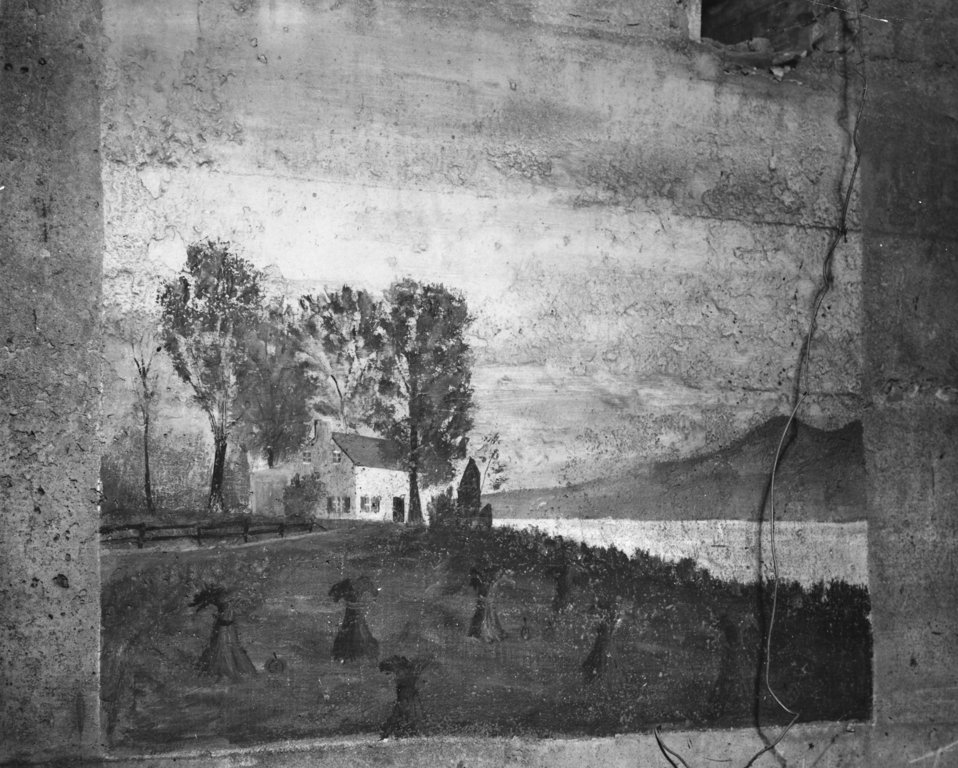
Painting of Wheat School by Edgar Ward 1940 Oak Ridge

MED-292 DOE photo Ed Westcott 1940 Oak Ridge Tennessee